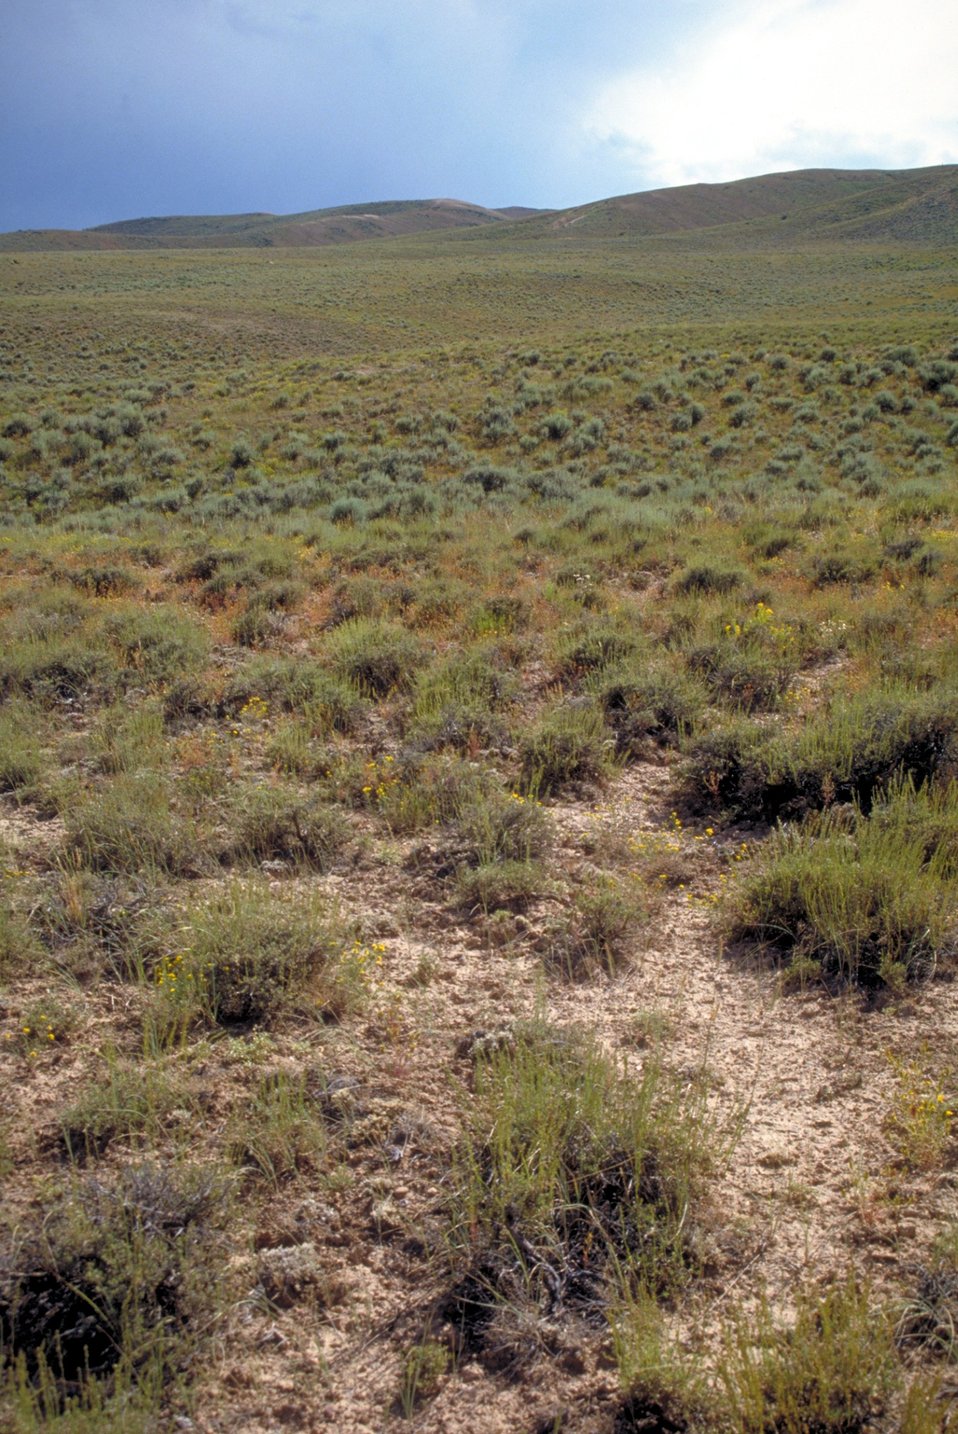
Rangelands in Northern Utah.